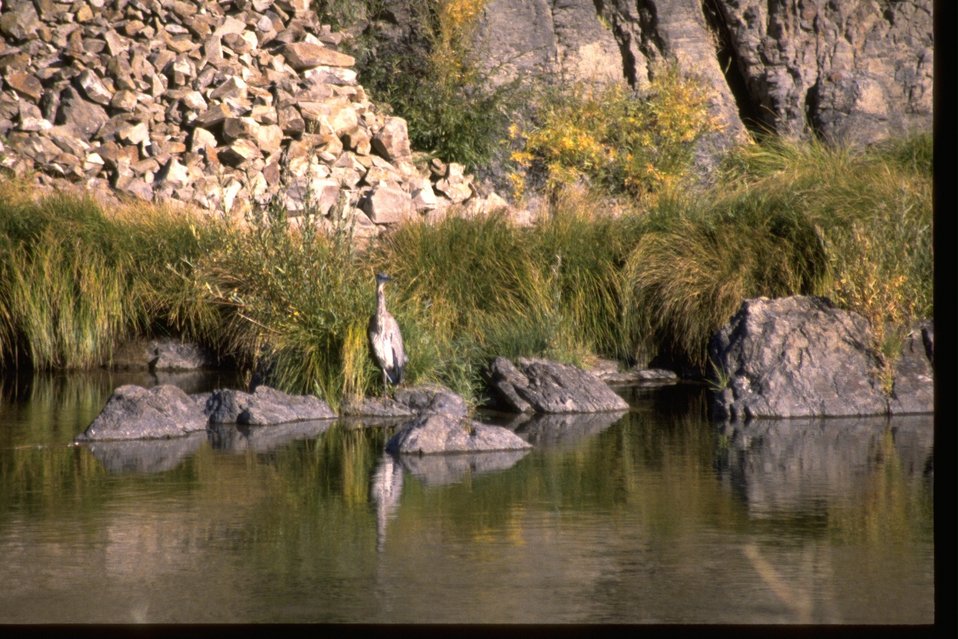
Heron on rock in John Day River with vegetation in the background.